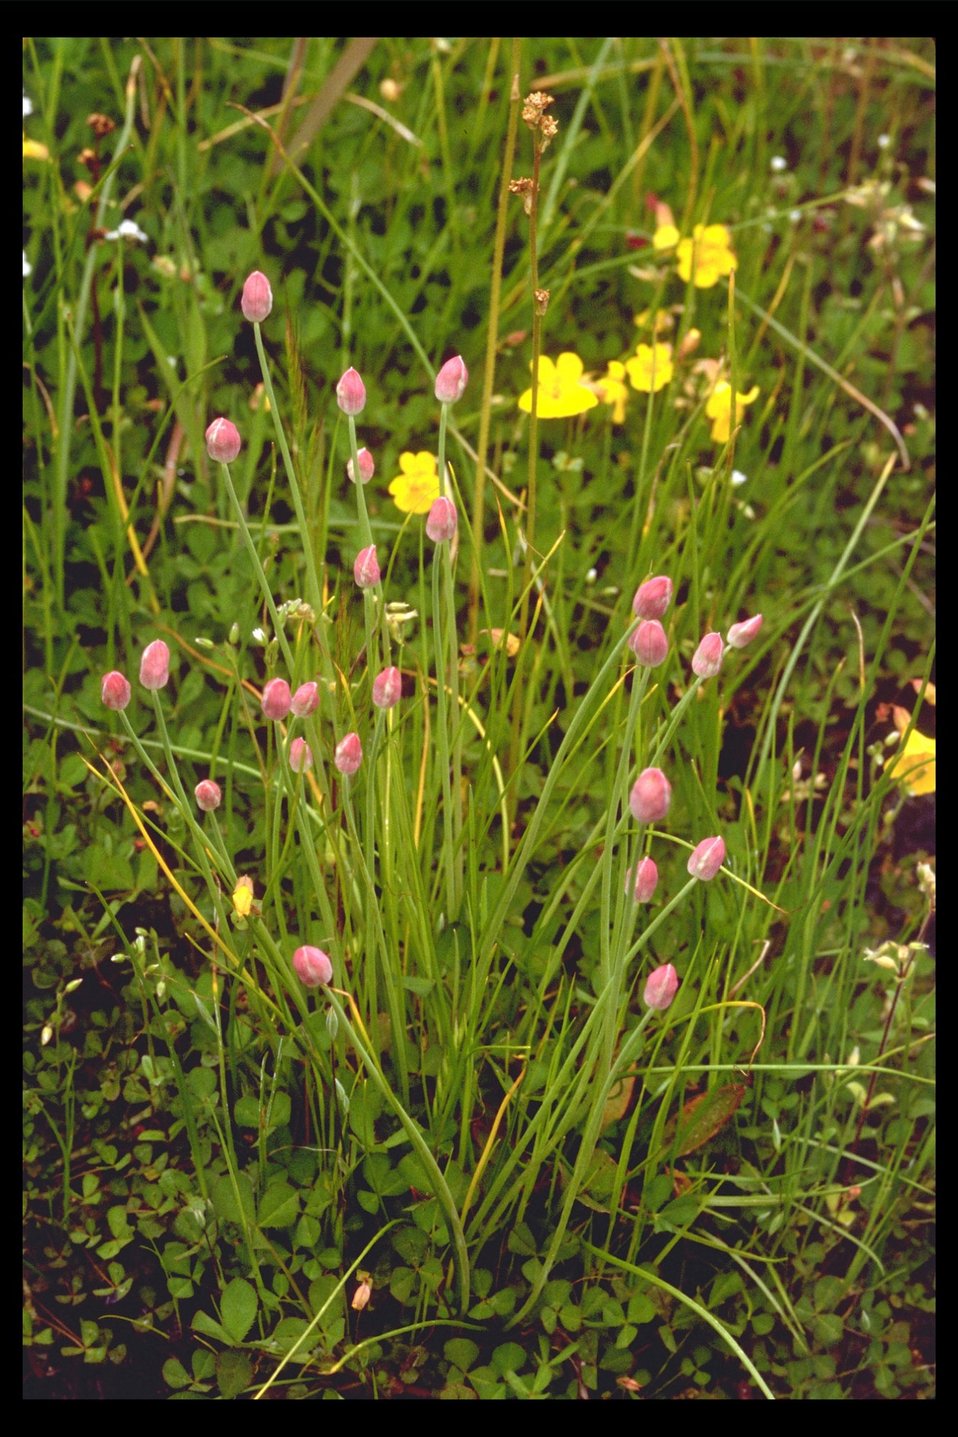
Wild Onion (Allium sp.) found along Crowfoot Road.